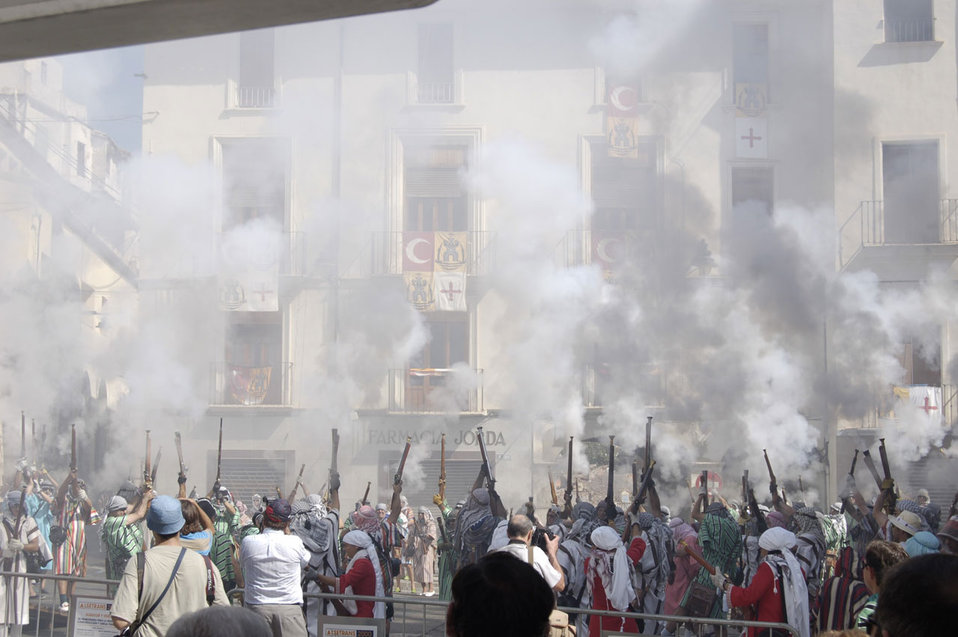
Party

Moors and christians in ontinyent.